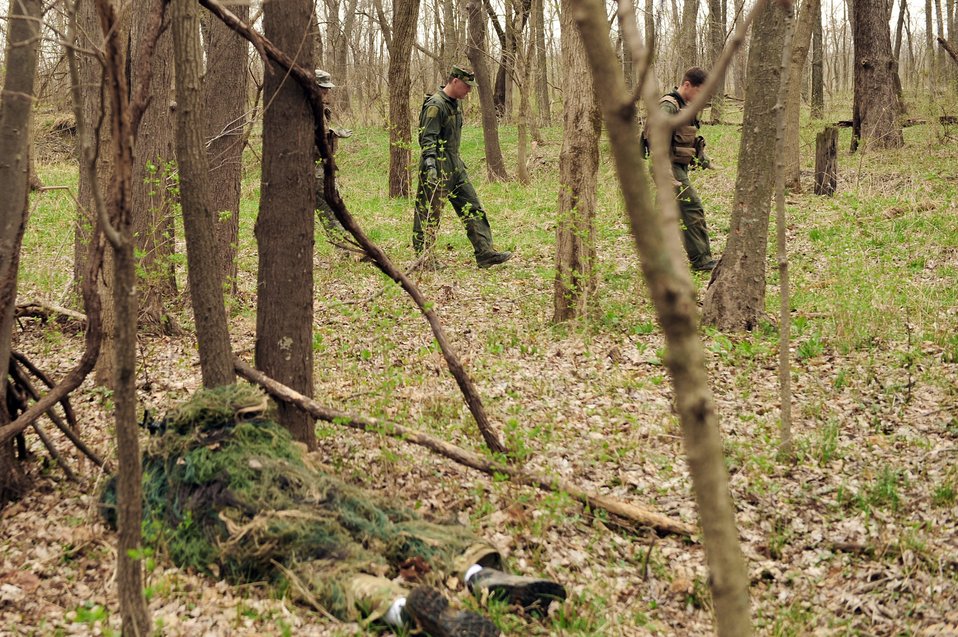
Combat survival training

Tech. Sgt. Robert Graham watches as aircrew members make their way to a rally point March 22, 2011, during combat survival training at the Illinois Army National Guard's Sparta Training Area in Sparta, Ill. Sergeant Graham is a survival, evasion, resistance and escape specialist assigned to the 375th Operations Support Squadron at Scott Air Force Base, Ill.